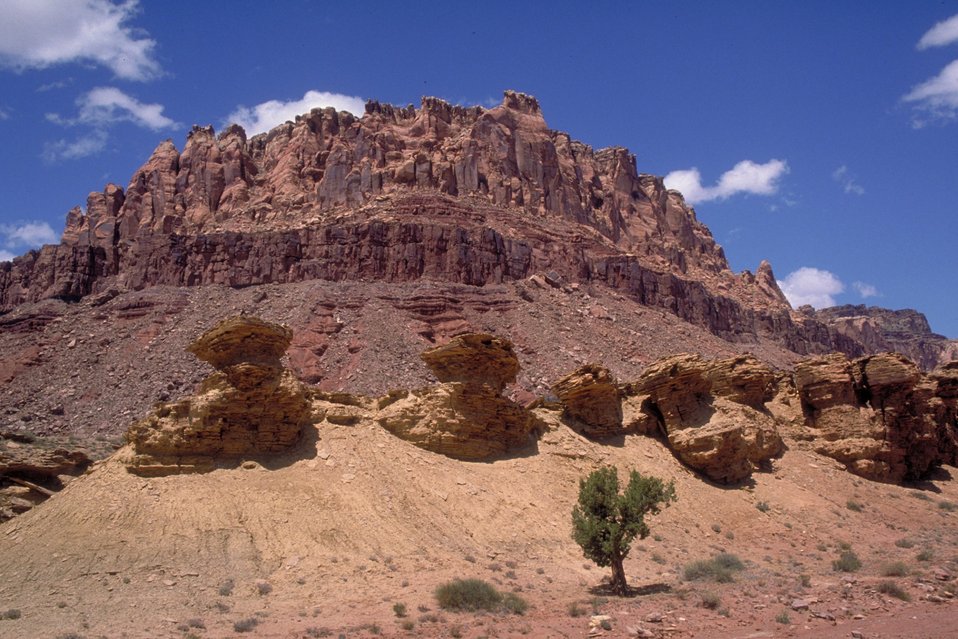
Formations near the Black Box, San Rafael Swell.